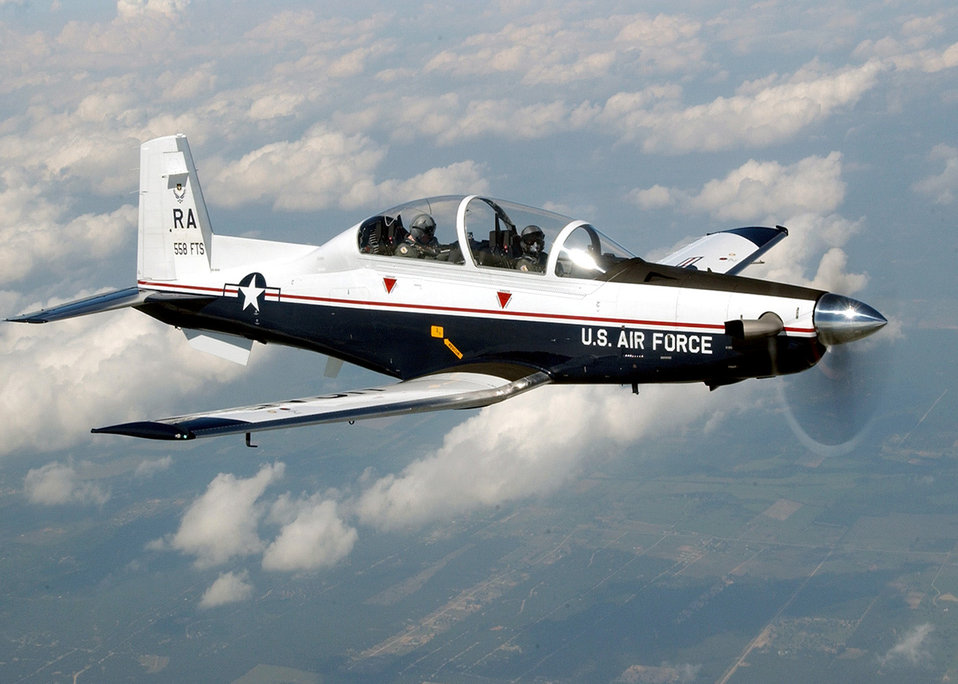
T-6A Texan II

RANDOLPH AIR FORCE BASE, Texas -- The T-6A Texan II is a single-engine, two-seat primary trainer designed to train Joint Primary Pilot Training, or JPPT, students in basic flying skills common to U.S. Air Force and Navy pilots. The trainer is phasing out the aging T-37 fleet throughout Air Education and Training Command.